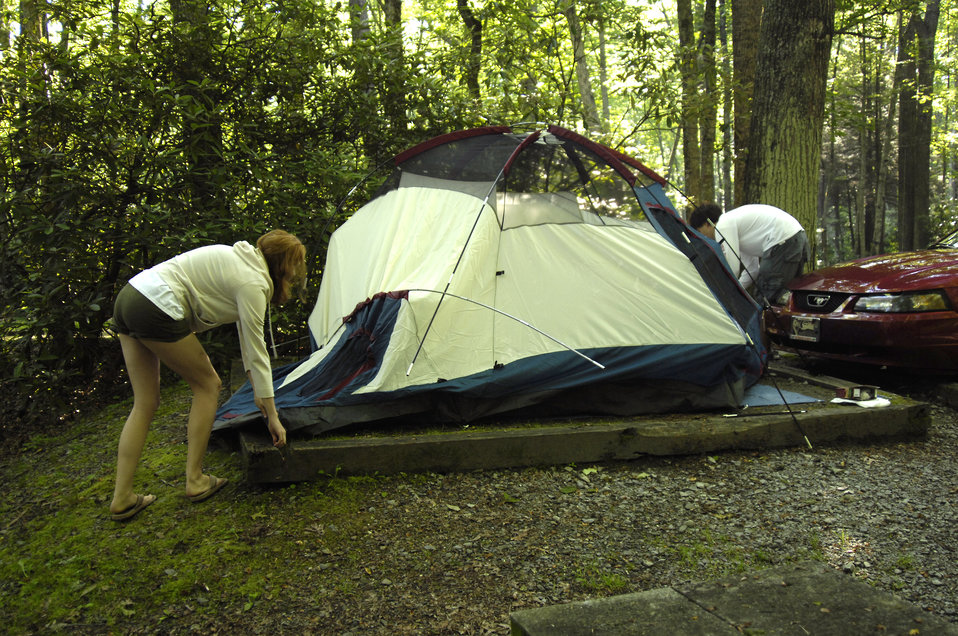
Visitors to a National Forest in North Carolina enjoy camping on June 25, 2009. National Forests offer visitors access to a diversity of outdoor recreational opportunities such as hiking, biking, riding horses, driving off-highway vehicles, picnicking, camping, hunting, fishing, rock climbing, and navigating waterways. Visitors can view wildlife, scenic vistas, and explore historic places.